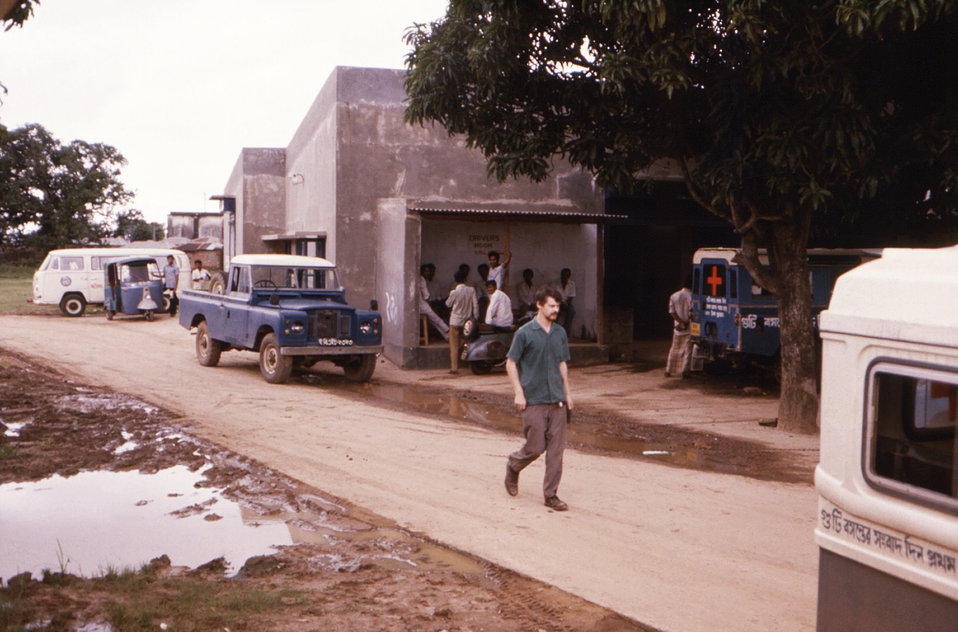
This historic image was captured during the smallpox eradication efforts of the 1970s, which successfully rid the World of this disease. This was the base camp in Dhaka, Bangladesh, where healthcare teams would meet to strategize their epidemiologic-based approach that would lead to disease eradication.